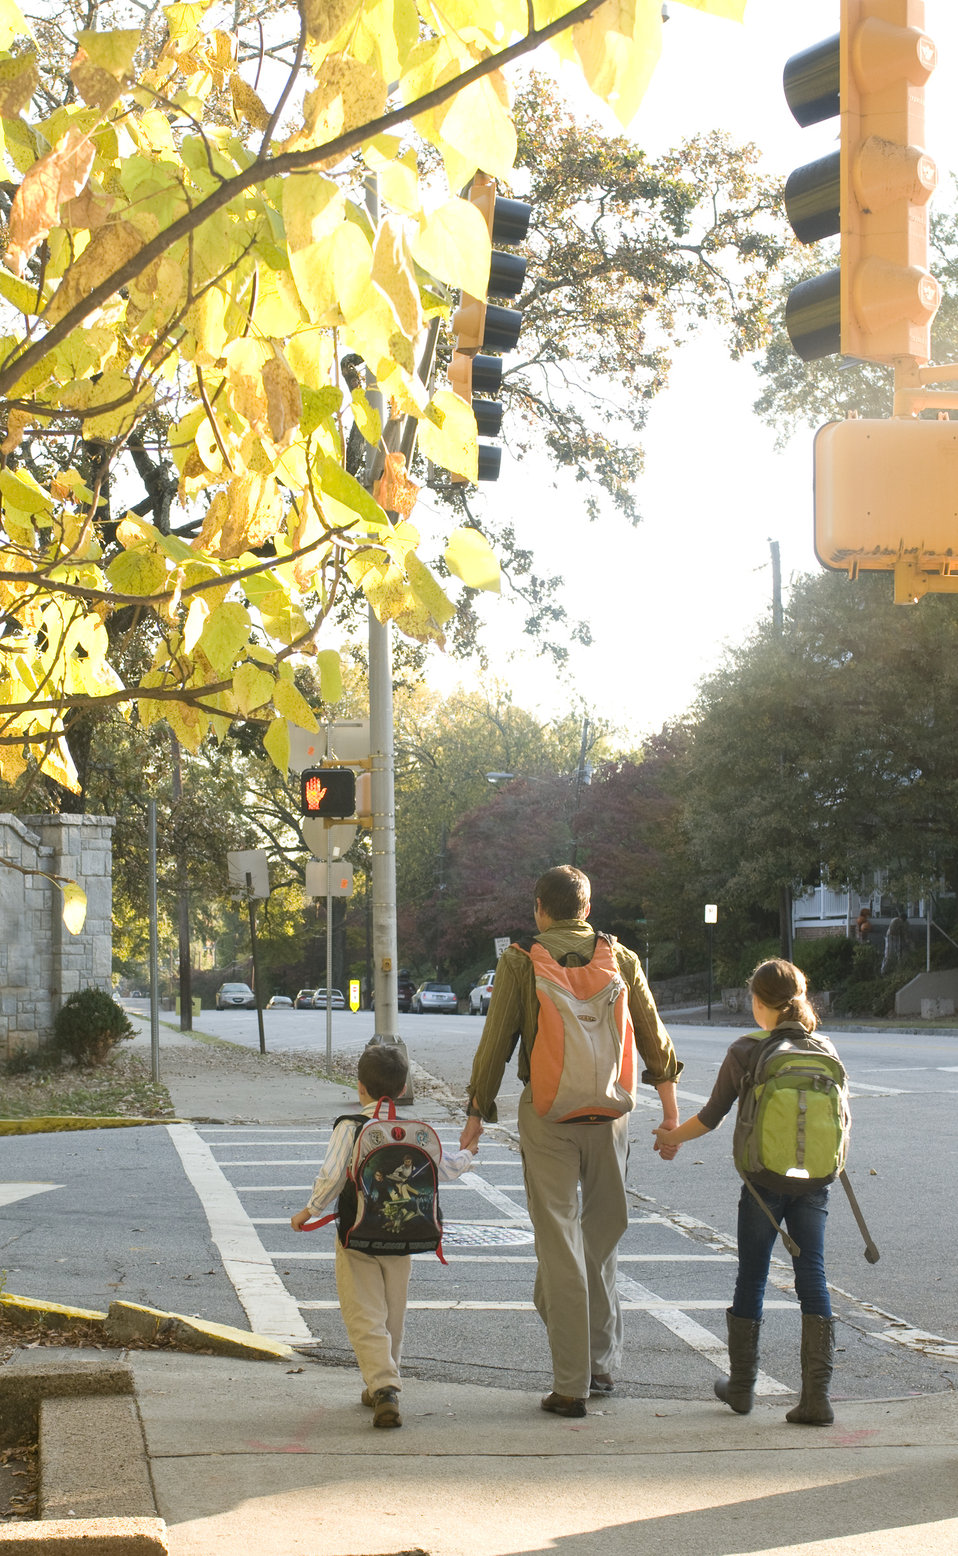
This father was shown walking on a Georgian city street, while holding hands with his two young children, his son to his left, and his daughter to his right. The three had paused at an intersection while waiting for the crosswalk signal to indicate permission to cross the street. Adherence to the rules and regulations governing our roadways, as well as staying alert and focused on the activities taking place all around you, will make for a much safer walking experience, especially on a city street.